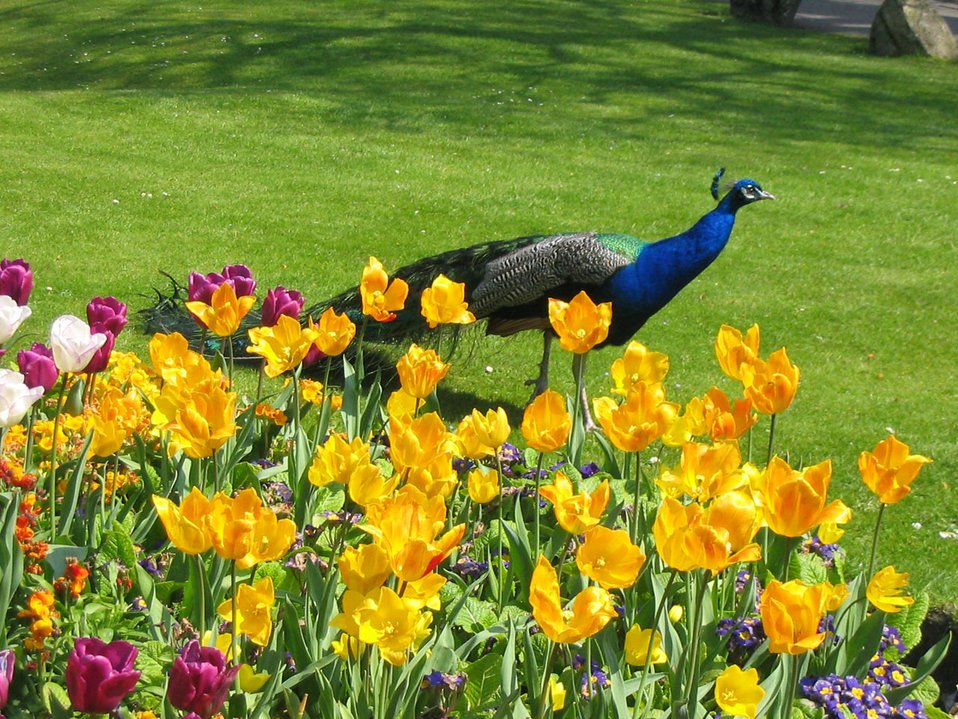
Peacock and flowers

A peacock in the garden.